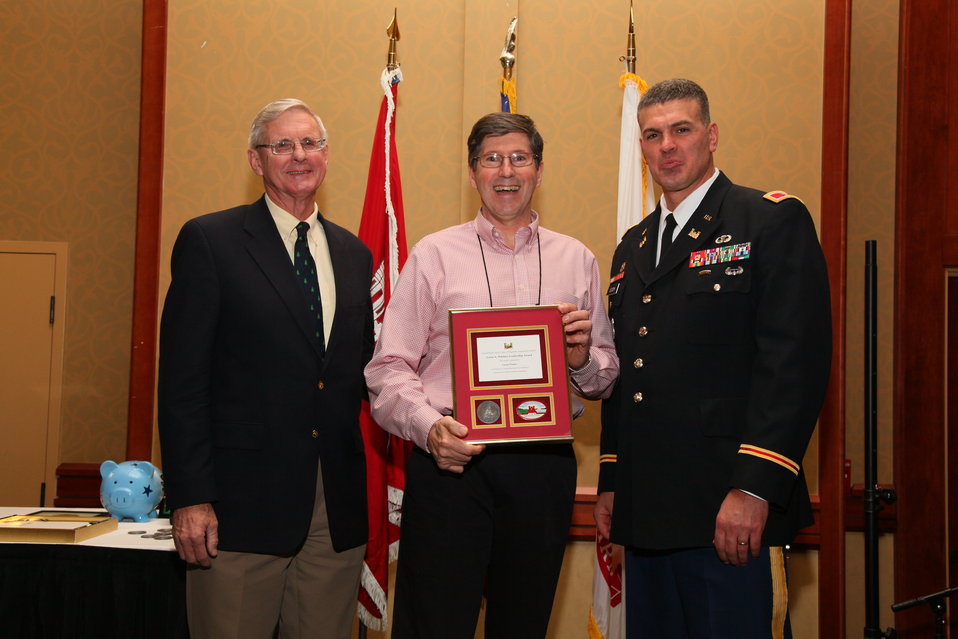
Sacramento District Holiday Party 2011